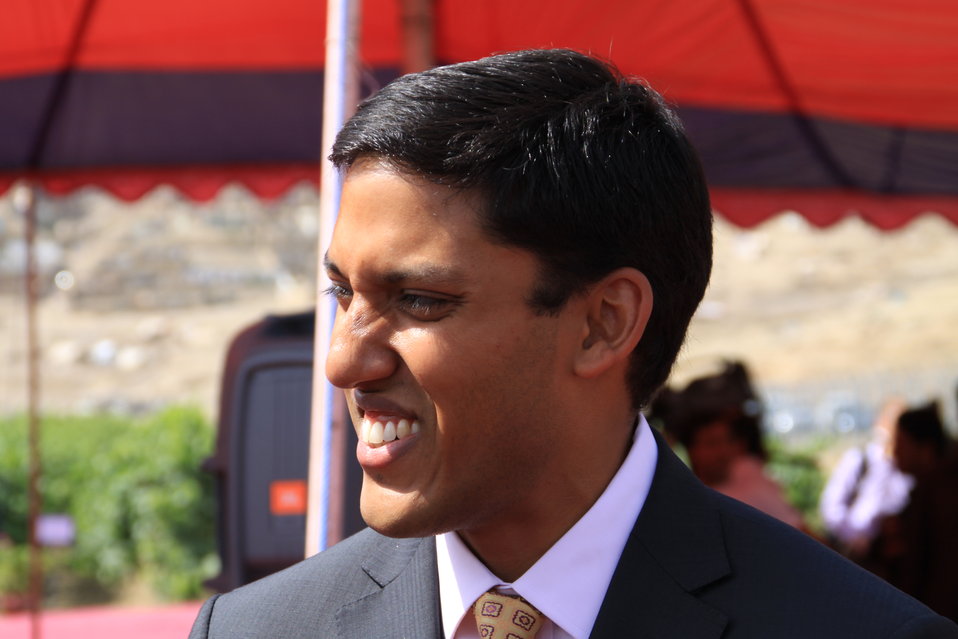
Badam Bagh Farm